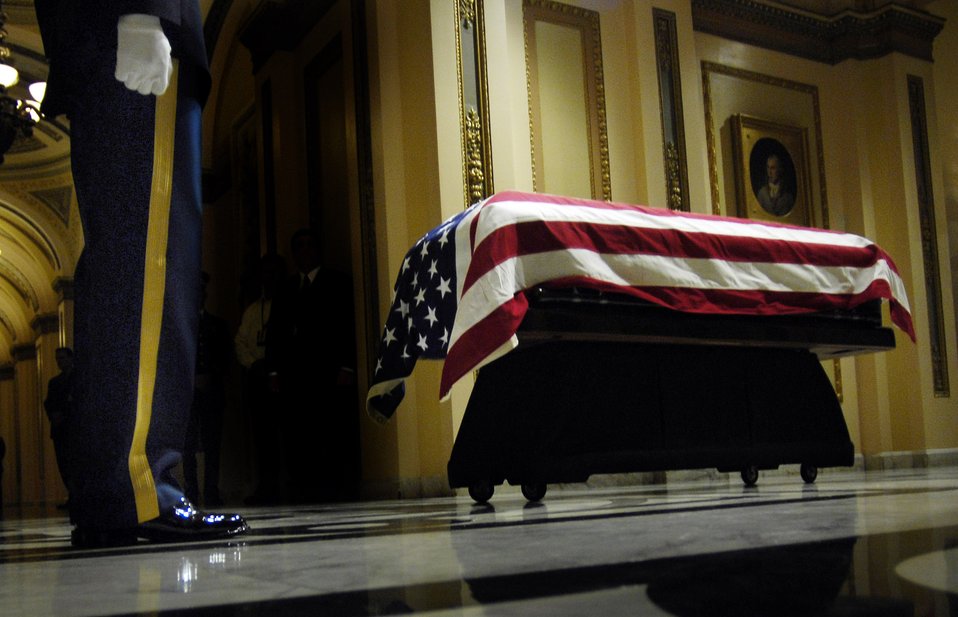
Fallen president

The casket containing the remains of former President Gerald R. Ford sits in the U.S. Capitol building Dec. 30 in Washington, D.C.